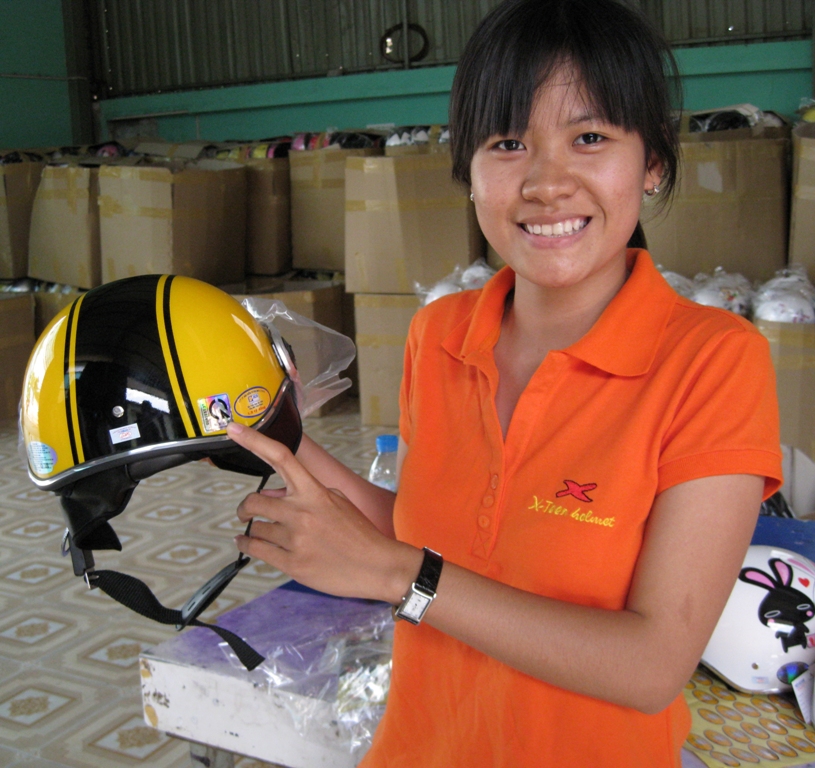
Standards boost competitiveness and quality in Vietnam

A helmet factory in Ho Chi Minh City is better able to compete after Vietnam, with technical support from USAID, ushered in standards as part of World Trade Organizations compliance measures.